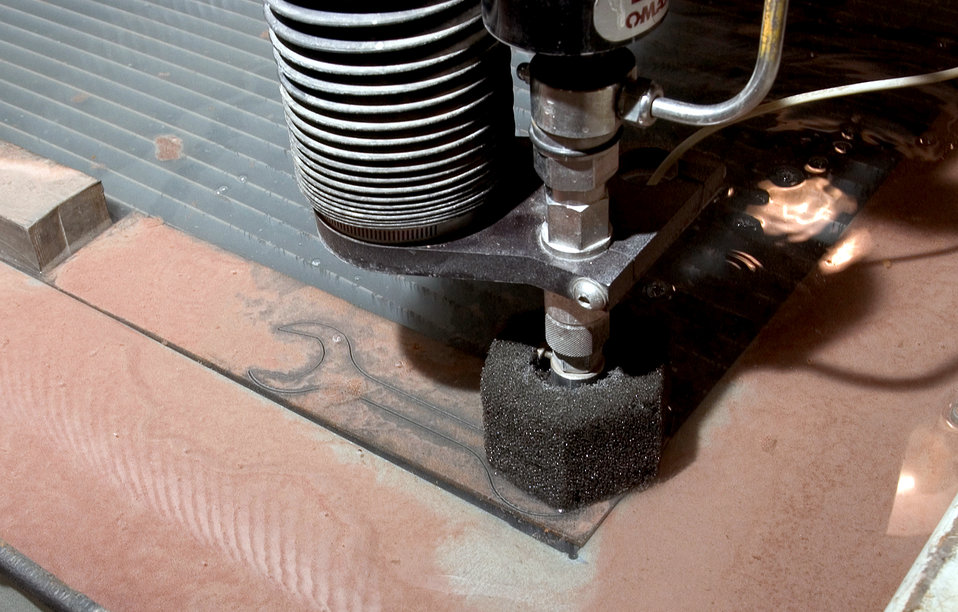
Technicians cut metal waste

An abrasive water-jet cutter puts the final cuts on a special tool that is being created by Airmen assigned to the 3rd Equipment Maintenance Squadron metals technology shop at Elmendorf Air Force Base, Alaska, on Friday, June 16.